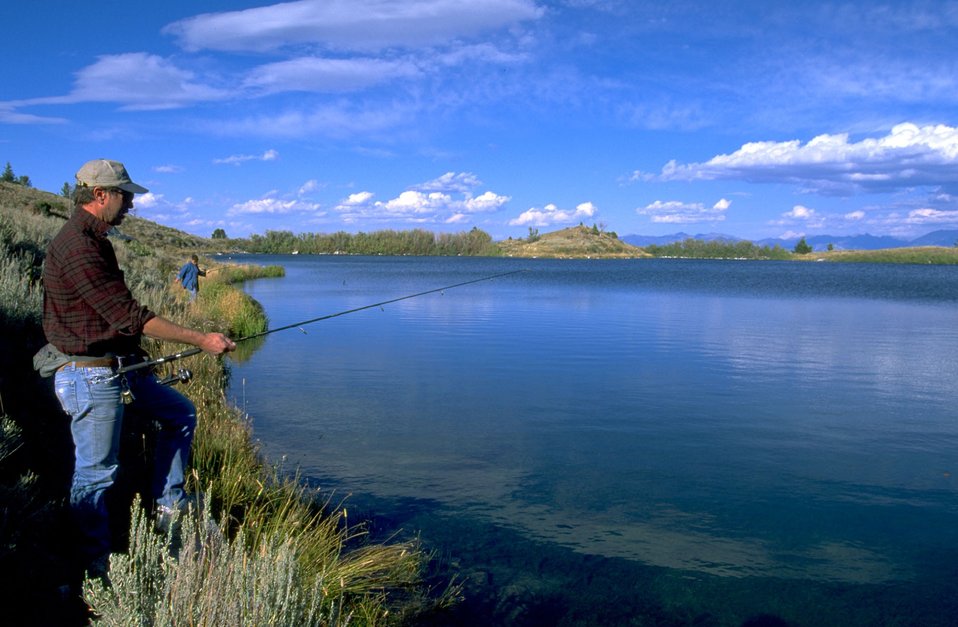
Fisherman trying his luck on a sun-filled summer day